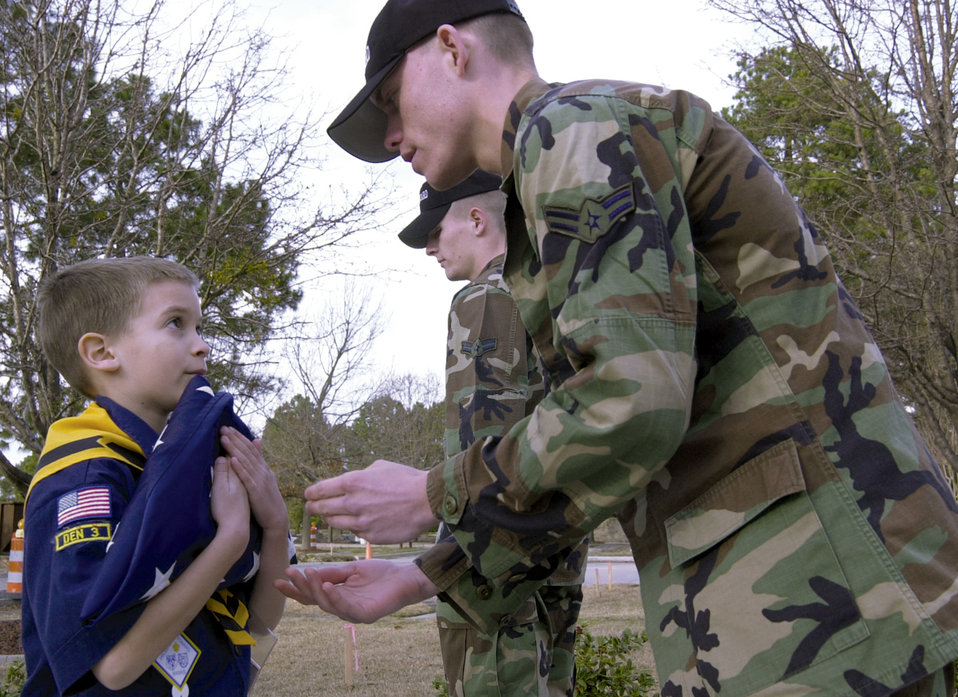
Flag Scout

SEYMOUR JOHNSON AIR FORCE BASE, N.C. -- Cub Scout Nicholas Anderson, 7, accepts the flag from Airman 1st Class John Day during a retreat ceremony here March 1. He was participating in the ceremony as part of a Scout project. Airman Day is a member of the base honor guard.